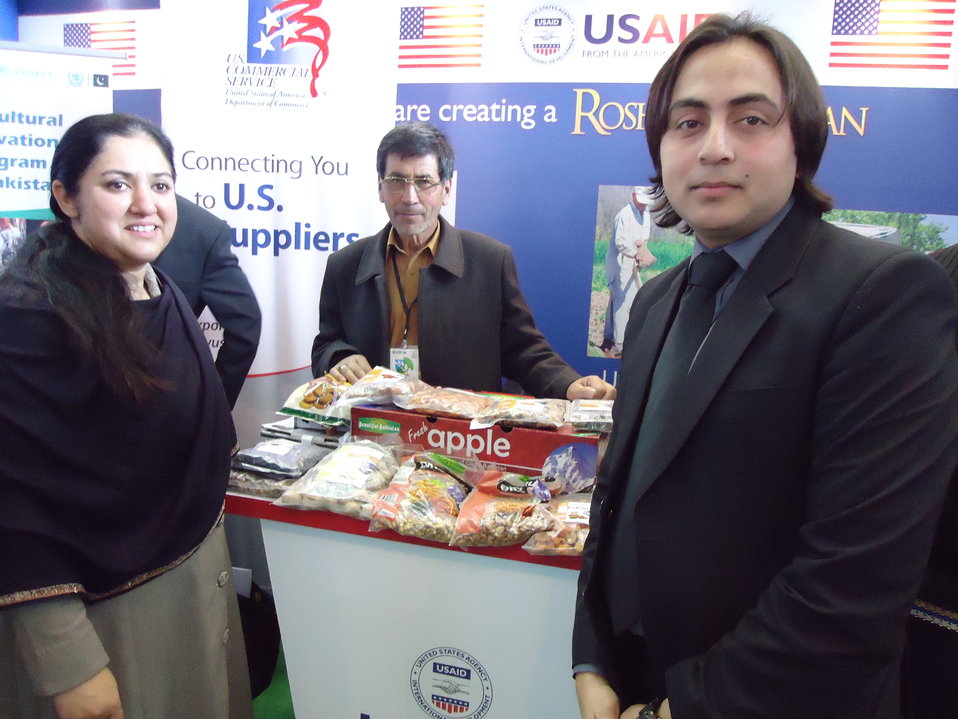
Sadpara Development Project

SDP USAID Stall at Dawn Agri Expo